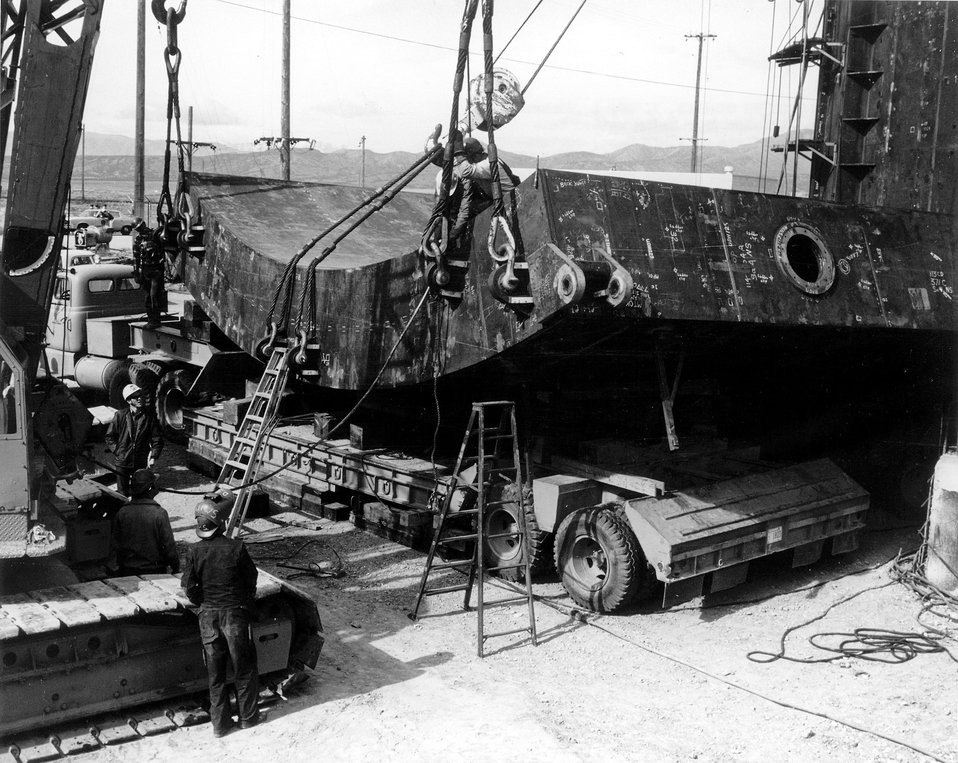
National Reactor Testing Station, Idaho... Workmen are dwarfed by the 200-ton door being raised into position for the LOFT (Loss of Fluid Test) containment building now 92 percent completed at the Atomic Energy Commission's National Reactor Testing Station in Idaho. Circa 1970.